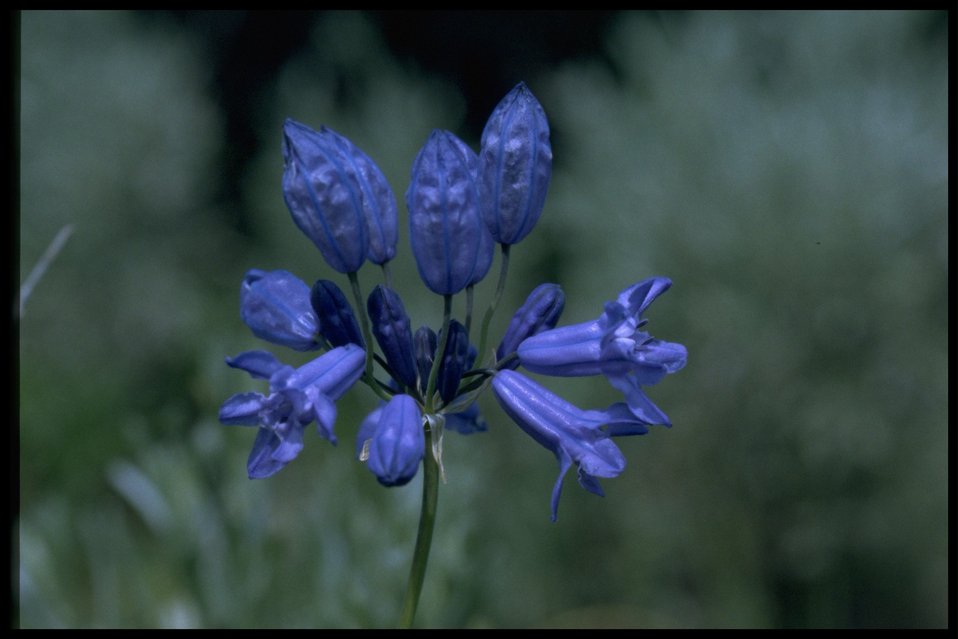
Closeup shot of Douglas' Brodiaea wildflower.